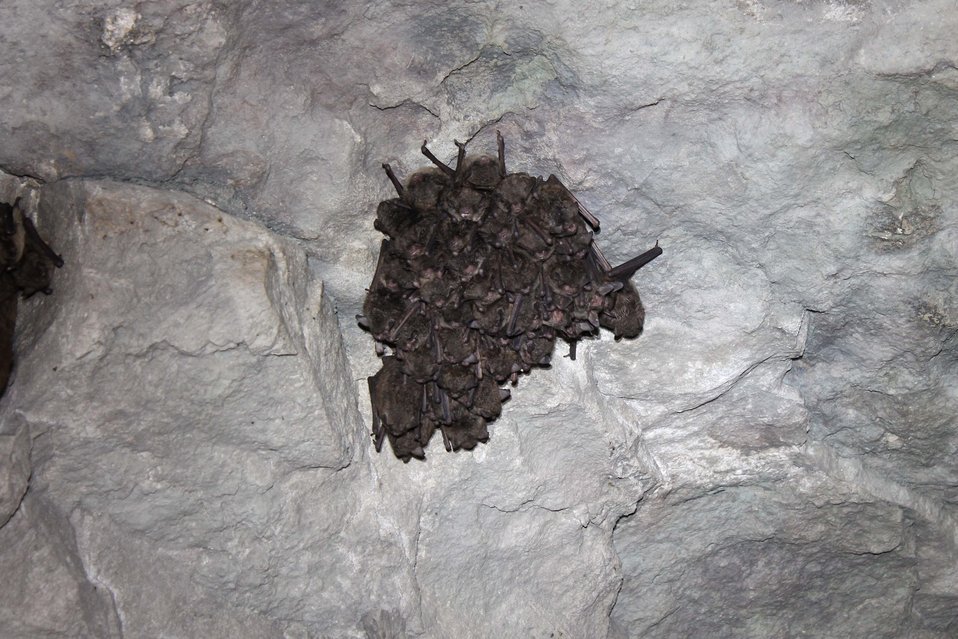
Indiana bat (Myotis sodalis)

Credit: USFWS; K. Lott
Feb. 18, 2012